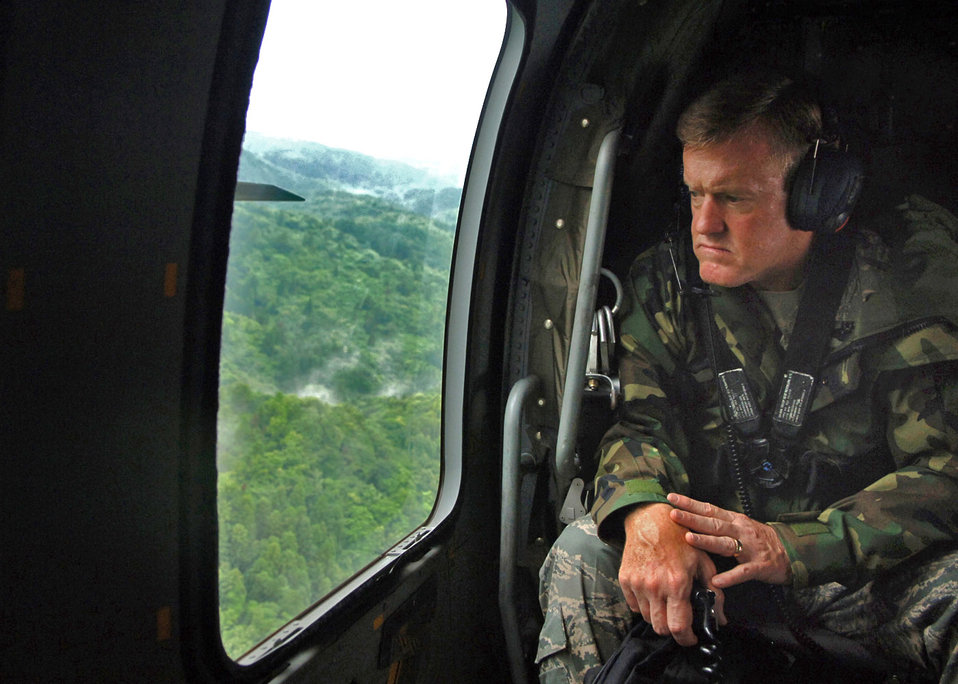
Commander visits Japan earthquake relief team

Lt. Gen. Bruce Wright looks out from a Japan Self Defense Force HH-60 Blackhawk helicopter as it flies over areas of Japan damaged by an earthquake July 16. The U.S. Forces Japan commander was visiting military relief teams providing support to citizens affected by the earthquake.